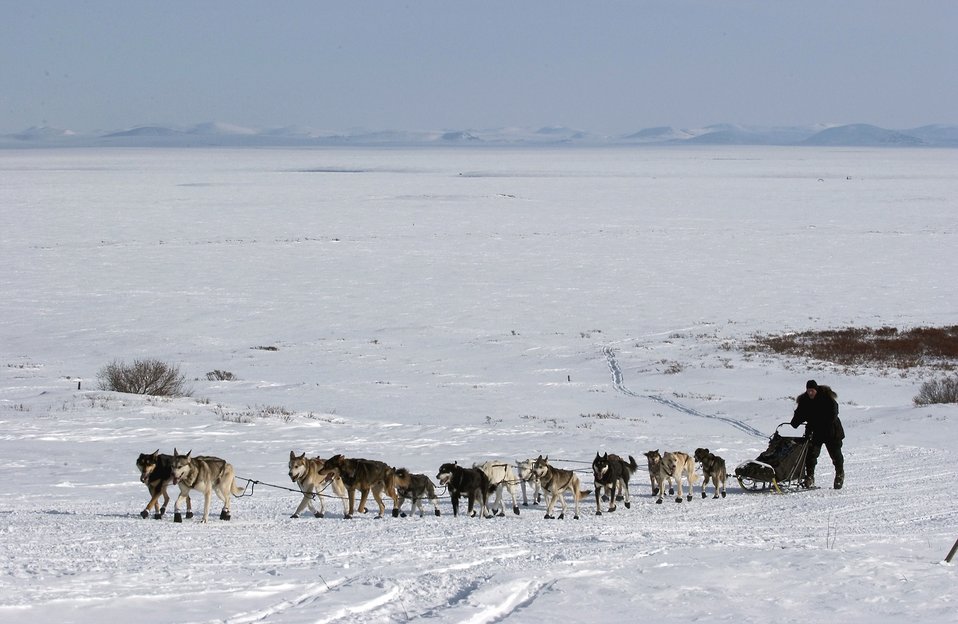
Air Force doctor finishes Iditarod with flourish

Maj. (Dr.) Thomas Knolmayer and his sled dog team cover the last 18 miles of the 2006 Iditarod Sled Dog Race in Nome, Alaska, Friday, March 17, 2006. Major Knolmayer finished the 1,150-mile race across Alaska in 11 days, 22 hours and 13 minutes, bettering his time from last year by 47 hours. Doctor Knolmayer is chief of surgery at the 3rd Medical Group at Elmendorf Air Force Base, Alaska.